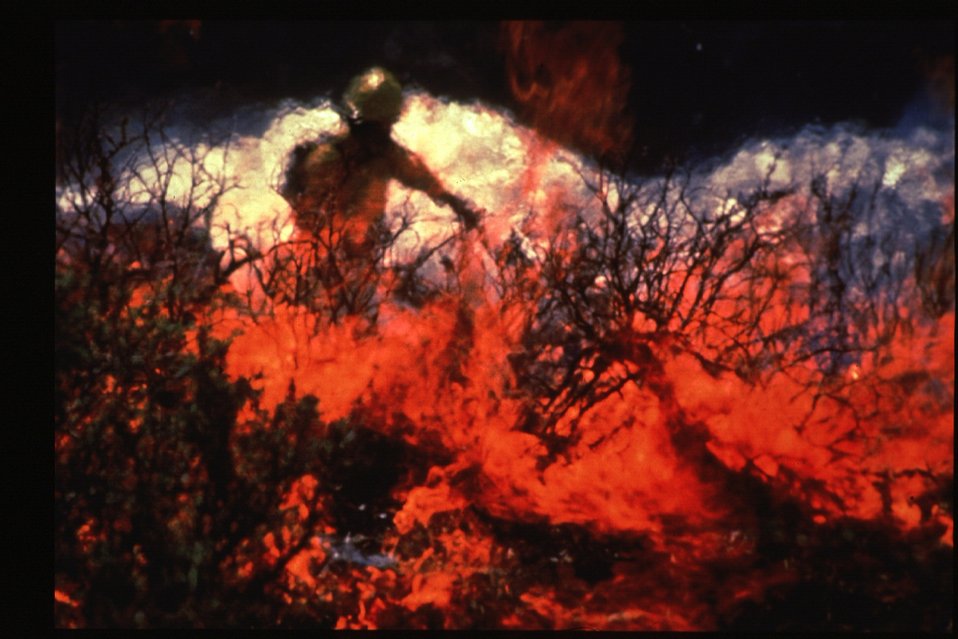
Boise Foothills Fire Danskin Mountains and South Fork of Boise River Wild Fire Fighter Four River Field Office LSRD Lower Snake River District